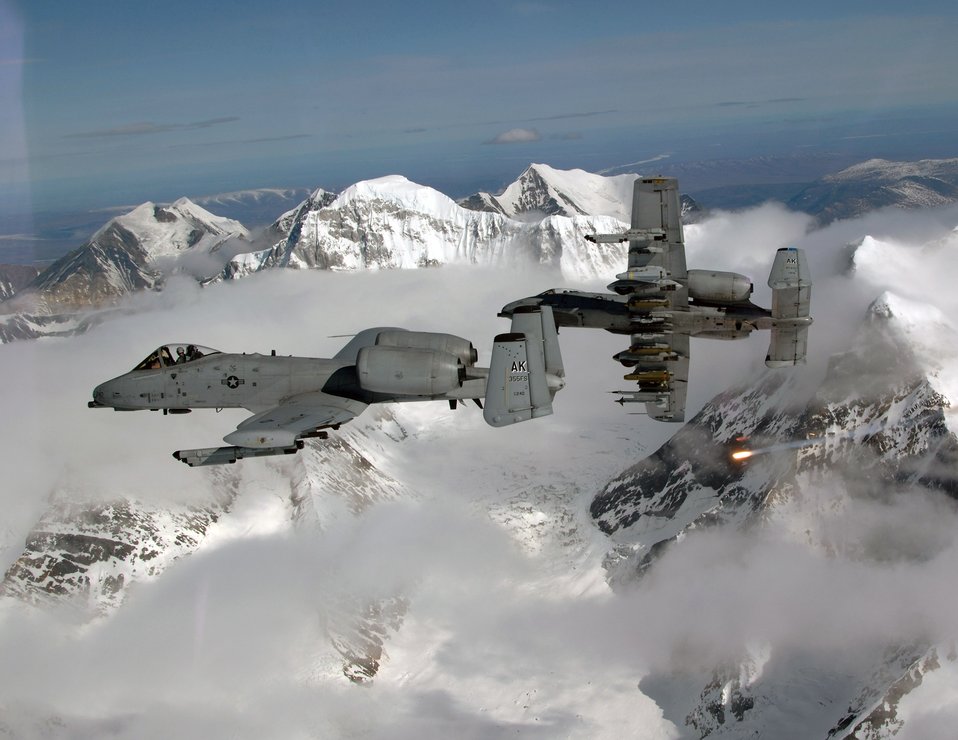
Thunder and lightning

A-10 Thunderbolt IIs break over the Pacific Alaska Range Complex and one aircraft drops a flare during live-fire training April 24. The A-10s are from the 355th Fighter Squadron at Eielson Air Force Base, Alaska. Members from the 355th FS are tasked to provide mission ready A-10s, as well as search and rescue capability in Alaska and deployed sites worldwide.